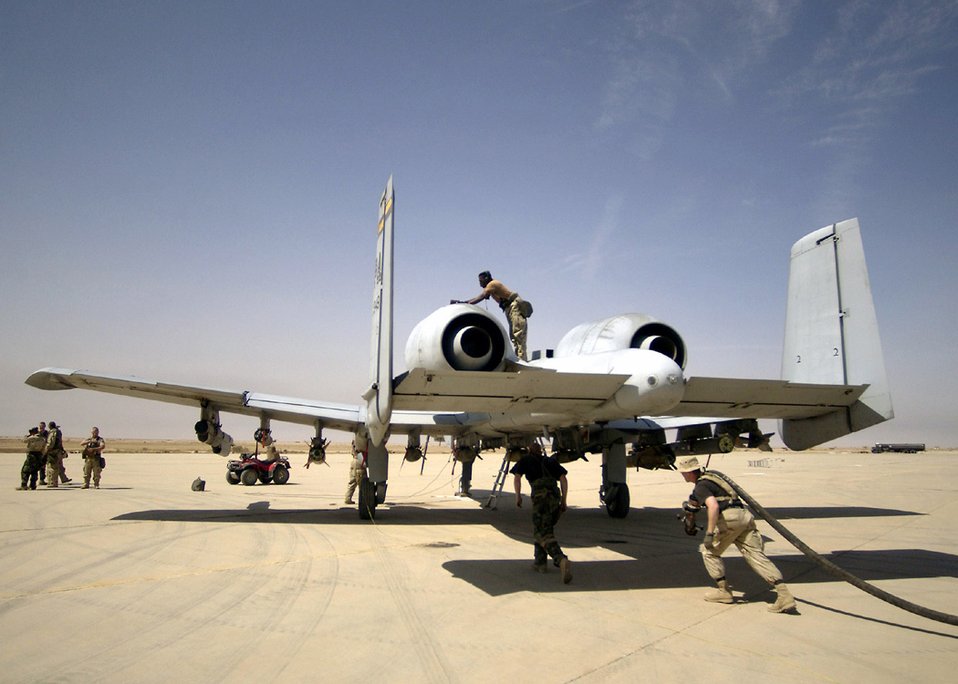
Oct. 5 airpower summary: maintenance crews keep fleet flying

392nd Air Expeditionary Wing aircraft maintenance personnel inspect and refuel an A-10 Thunderbolt II aircraft at a forward-deployed location in Southern Iraq in support of Operation Iraqi Freedom.